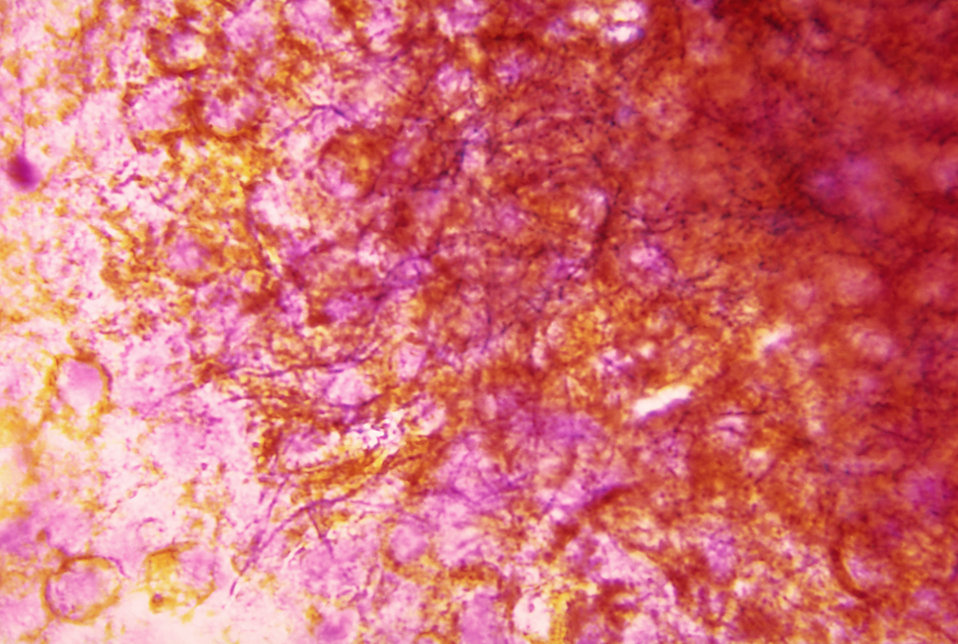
This micrograph depicts Nocardia brasiliensis found in a purulent exudate from a skin lesion using gram-stain.